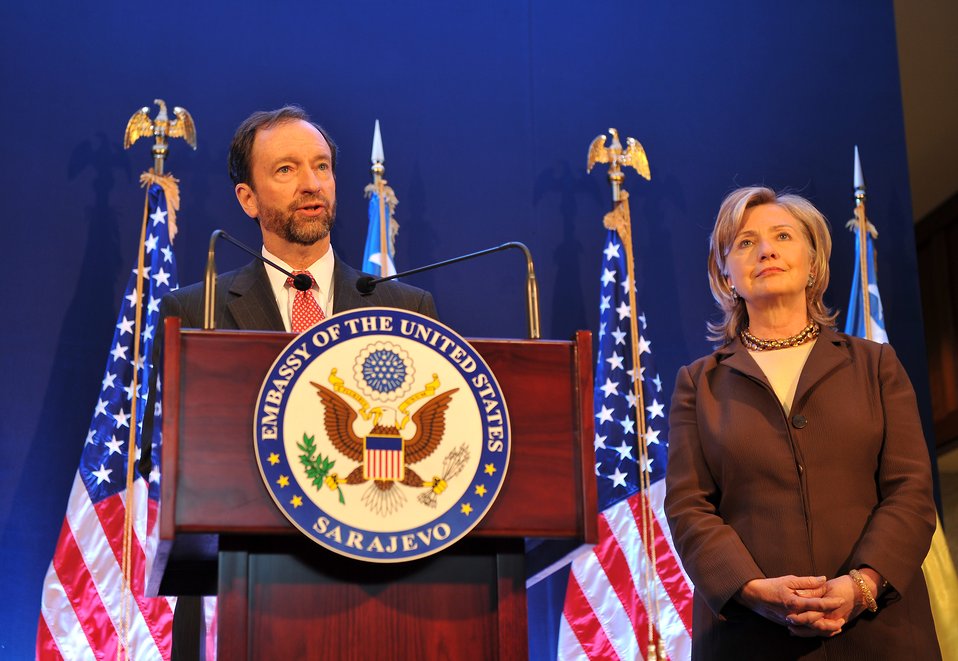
Ambassador Moon Introduces Secretary Clinton

U.S. Ambassador to Bosnia and Herzegovina Patrick S. Moon introduces U.S. Secretary of State Hillary Rodham Clinton at the ceremony for the new embassy compound in Sarajevo, Bosnia and Herzegovina, on October 12, 2010.